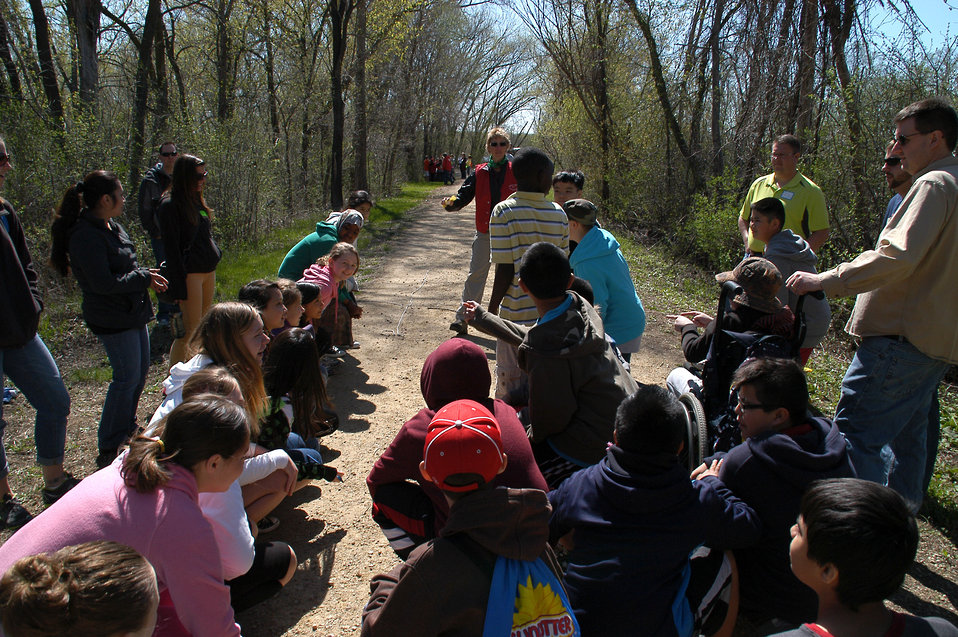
Fishing Ethics and Safety

A volunteer at the Fishing Ethics Station challenges students to kneel down if they know how to safely remove and discard bait while fishing.